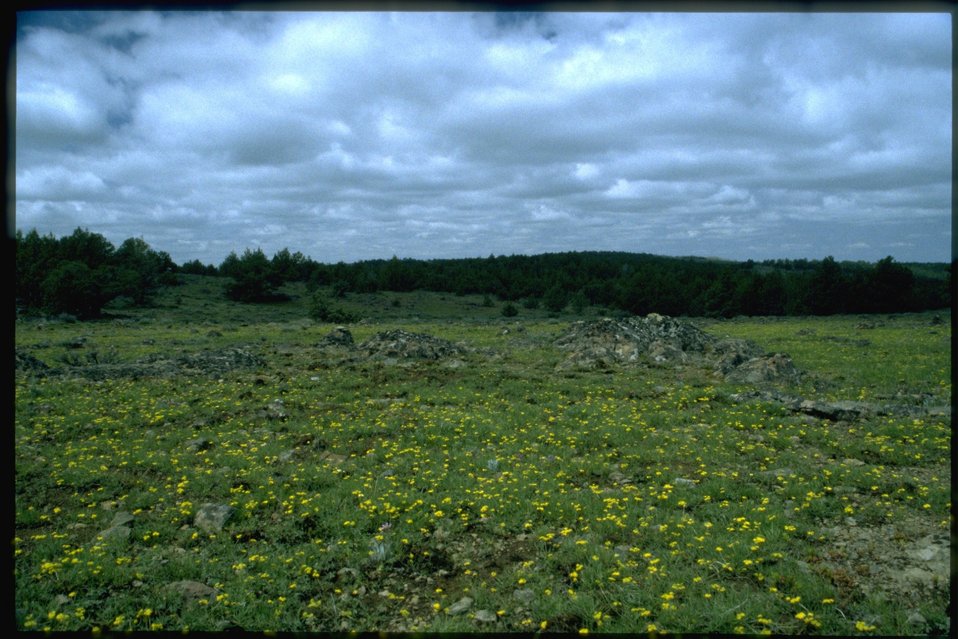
Scabland wildflower area with Nineleaf Lomatium in foreground.